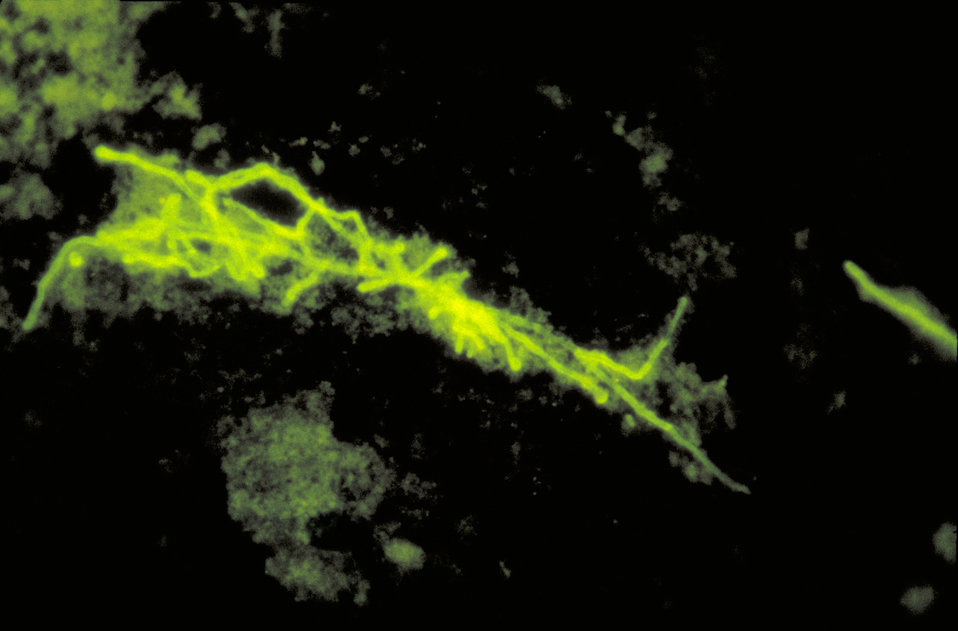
A photomicrograph of Actinomyces israelii removed from a brain abscess, using FA staining technique; Magnified 567X.